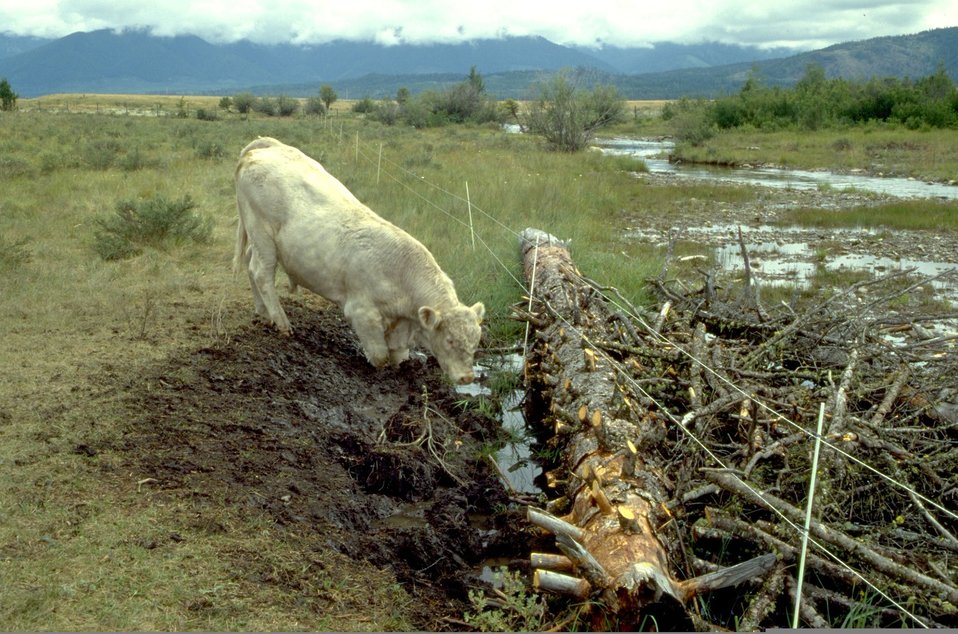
Riparian damage